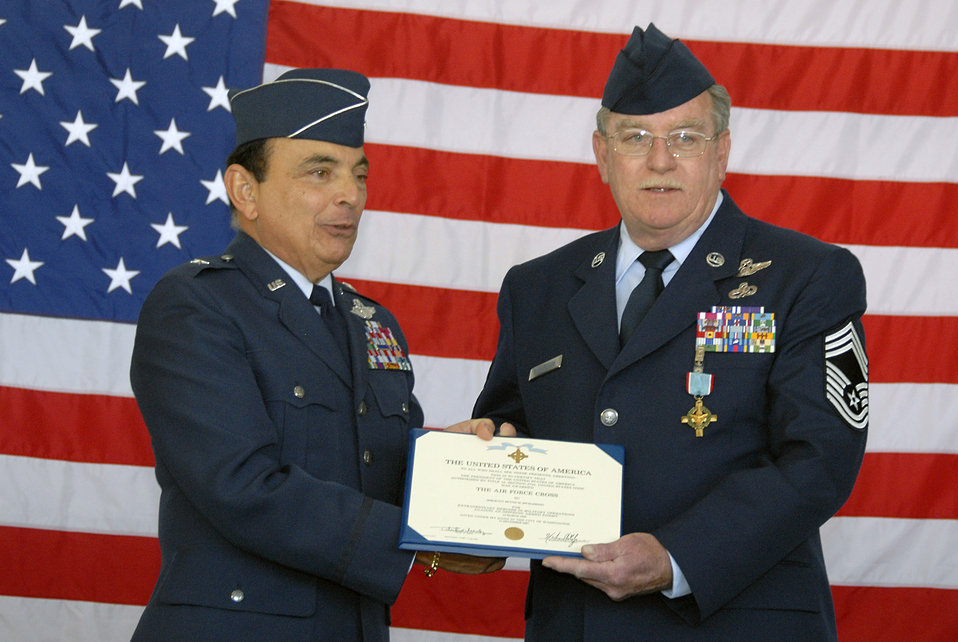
Chief receives Air Force Cross 40 years after mission

Retired Brig. Gen. Frank Cardile (left) awards retired Chief Master Sgt. Dennis Richardson after presenting him with the Air Force Cross April 5 at the Francis S. Gabreski Airport in New York. Chief Richardson was awarded the Air Force's second-highest honor for valor because of his actions during a March 1968 mission to rescue Airmen in Vietnam. During the mission, Richardson stood exposed in the door of an HH-53 Jolly Green Giant helicopter to fight off enemy forces attempting to board it.